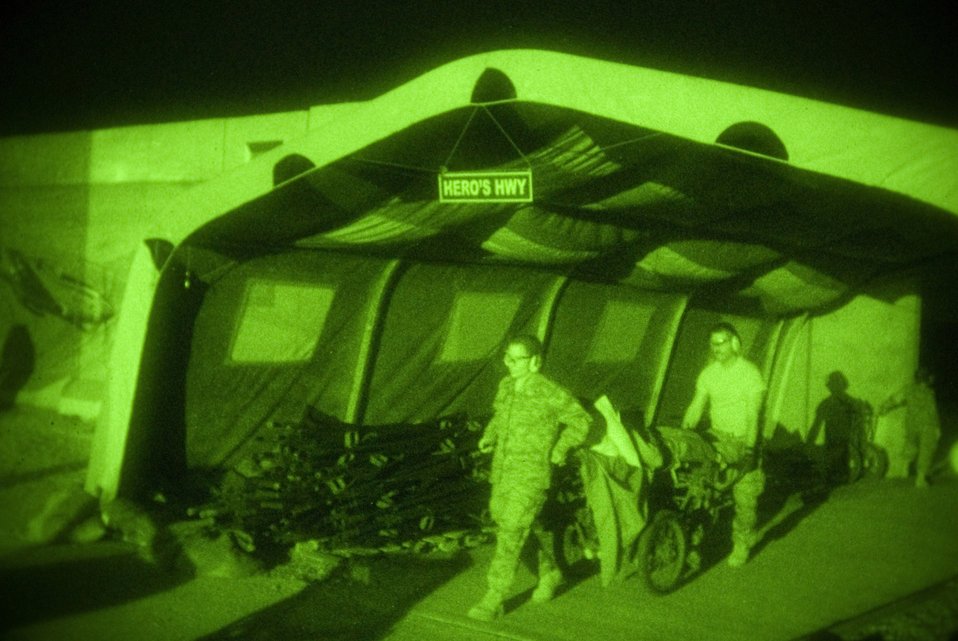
Airman survives 'million-dollar' wound

Airman 1st Class Michael Brady is wheeled through